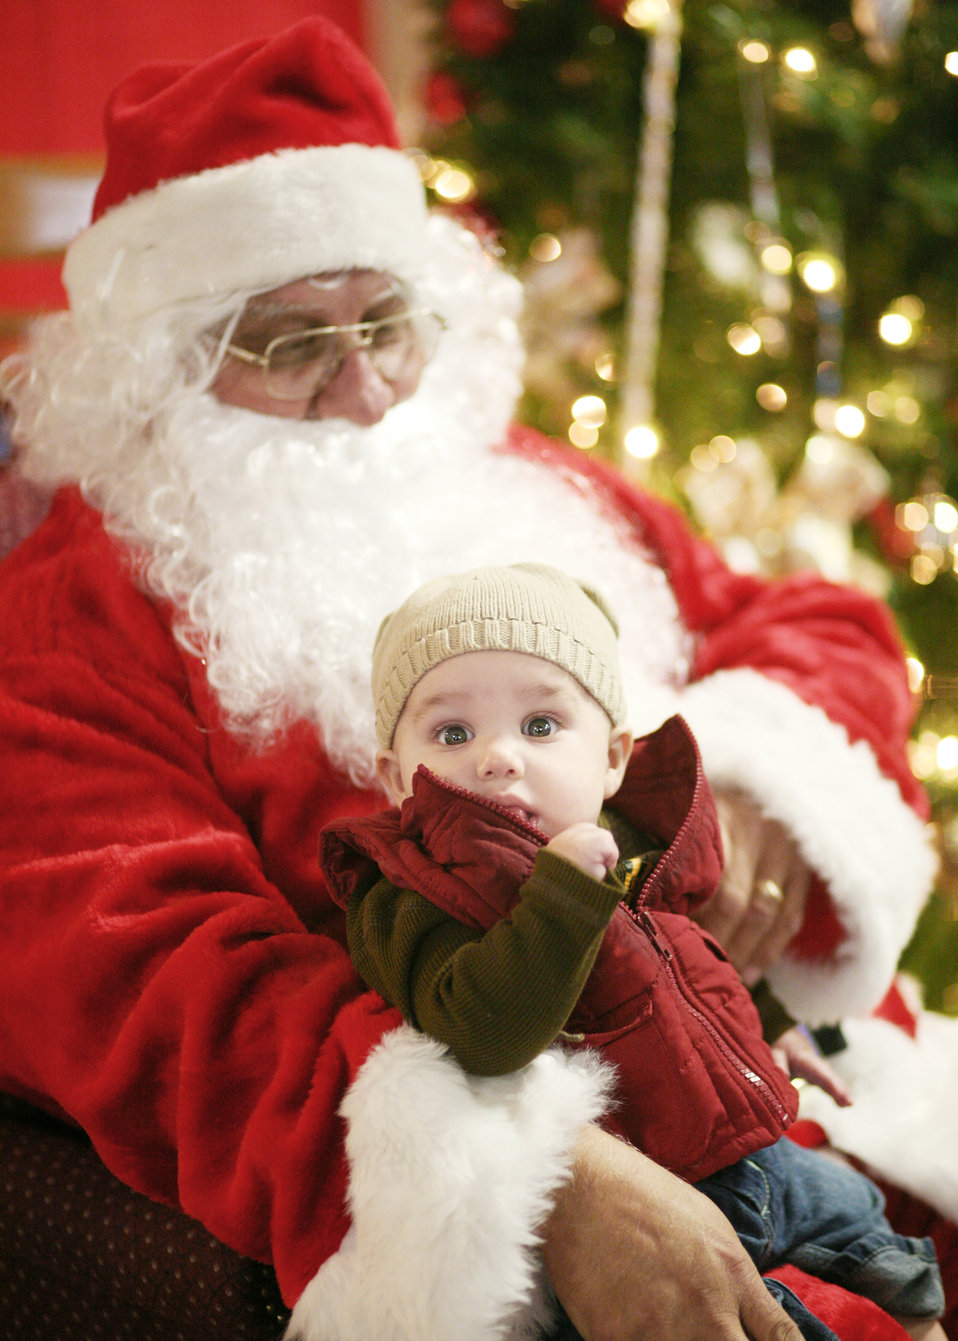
OK, I'm done now

Gavin, son of Staff Sgt. Sue Hemgesberg, sits in Santa's lap during the children's holiday party at the Skylark Community Center at Lackland Air Force Base, Texas, Dec. 12, 2009. The children's holiday party included games, crafts, prizes, food and music. Sergeant Hemgesberg is assigned to the 59th Laboratory Squadron.